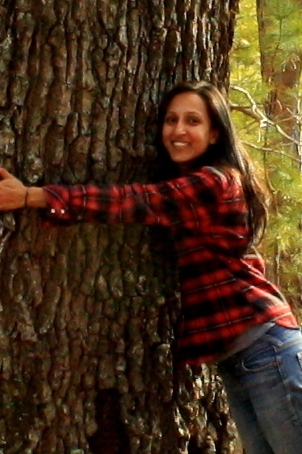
Monica Patel

FWS Wilderness Fellow Monica Patel